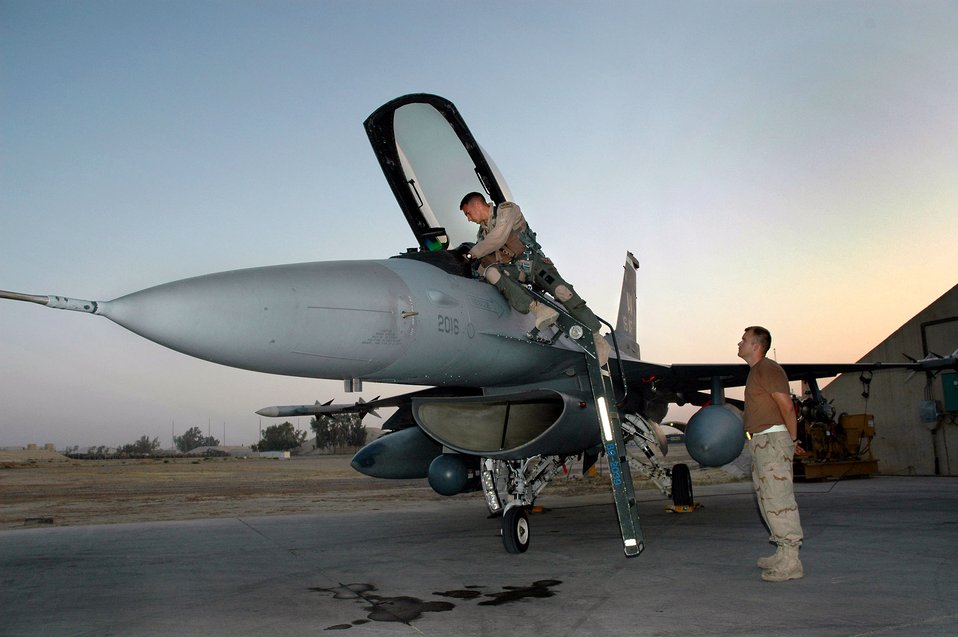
Preparing for the mission

Senior Airman Gaylon Hardman (right), a crew chief with the 332rd Expeditionary Aircraft Maintenance Squadron, waits to assist F- 16 pilot Capt. Bart Wilbanks prepare for a combat mission in support of Operation Iraqi Freedom Sept. 20, 2005. Both Airmen are from the 31st Fighter Wing at Aviano Air Base, Italy, and deployed to Balad Air Base, Iraq.